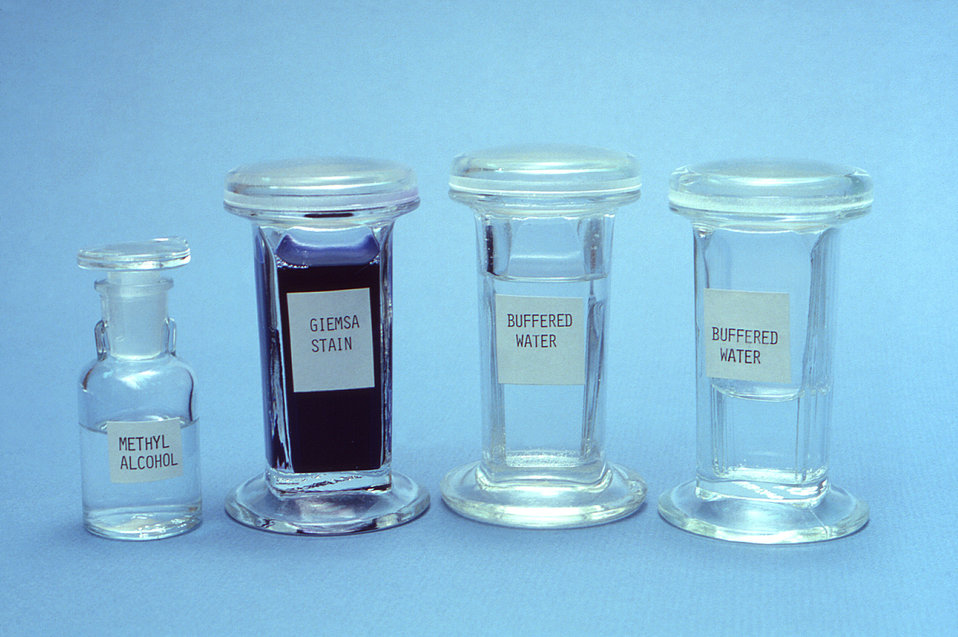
This 1981 photograph depicted a few of the laboratory materials integral in the fixation of thin blood films by using the Giemsa staining procedure.Thin smears